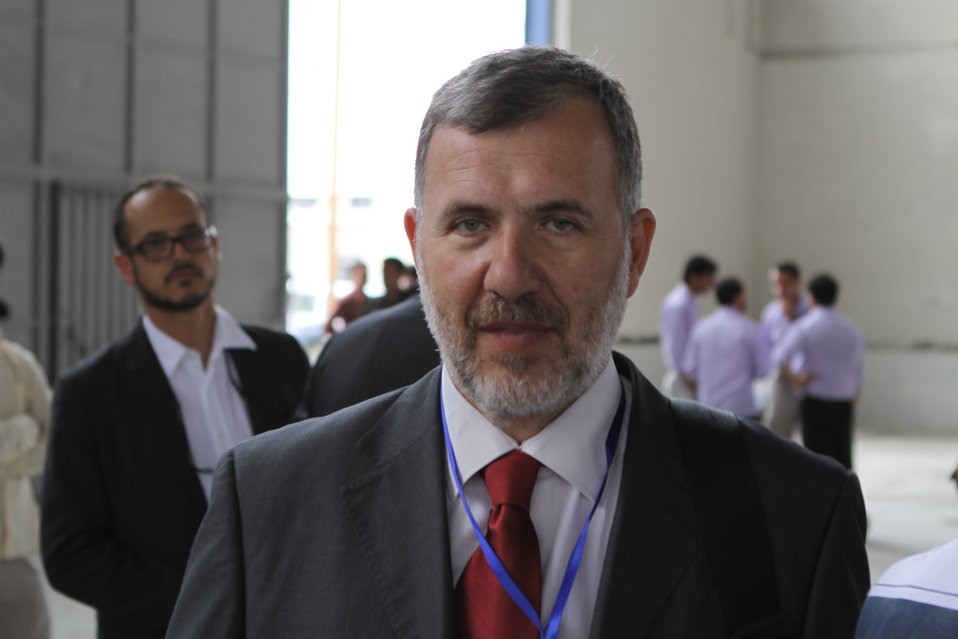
100525 Hirat Marble Conference 283